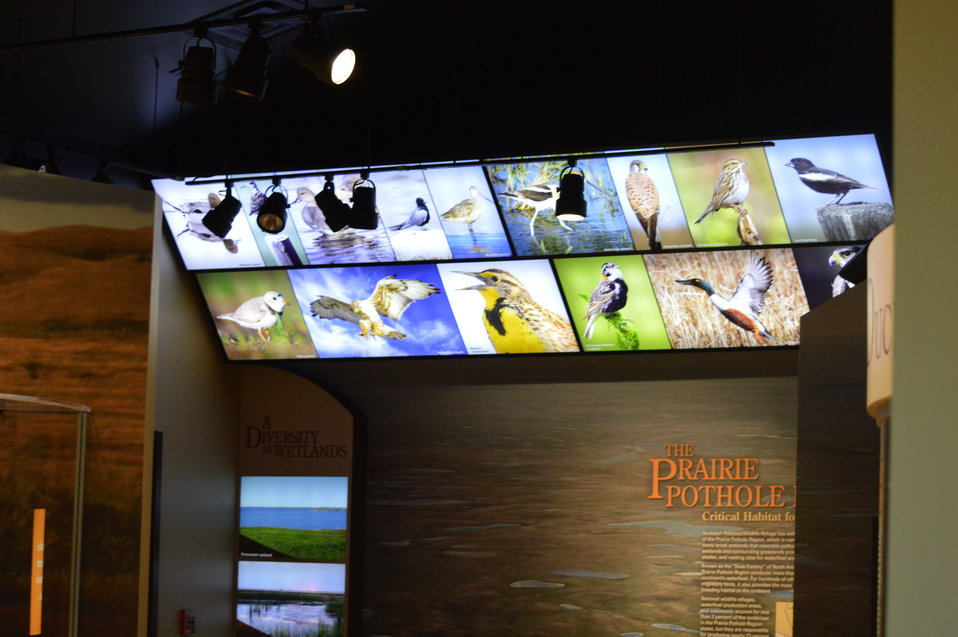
Exhibit in Visitor Center

A new exhibit in the Visitor Center features exhibits on wetland and grassland habitat, migratory birds, night life of the refuge, John James Audubon, Refuge history, and more.